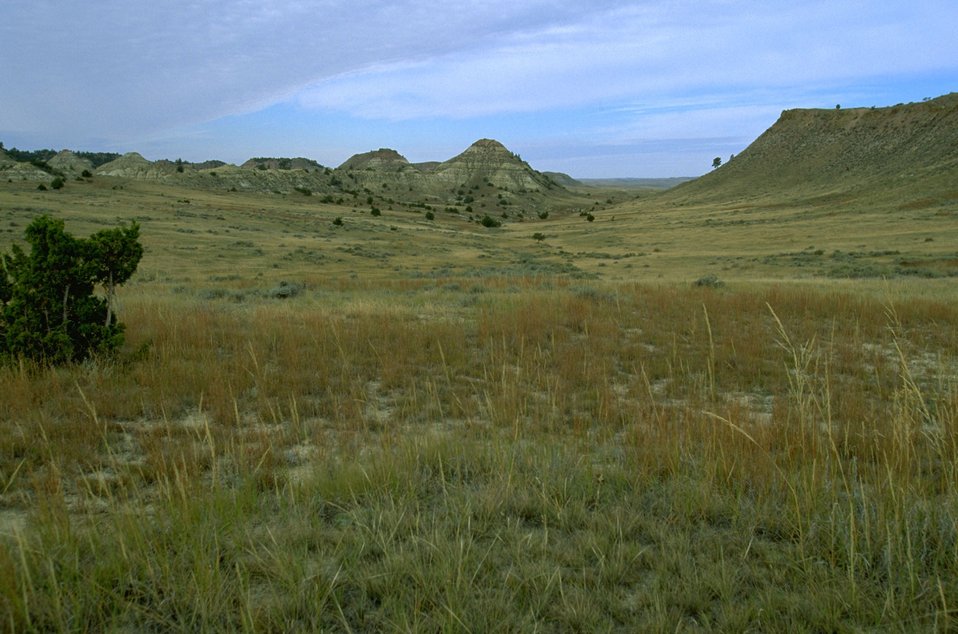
Grassy valley in the Terry Badlands